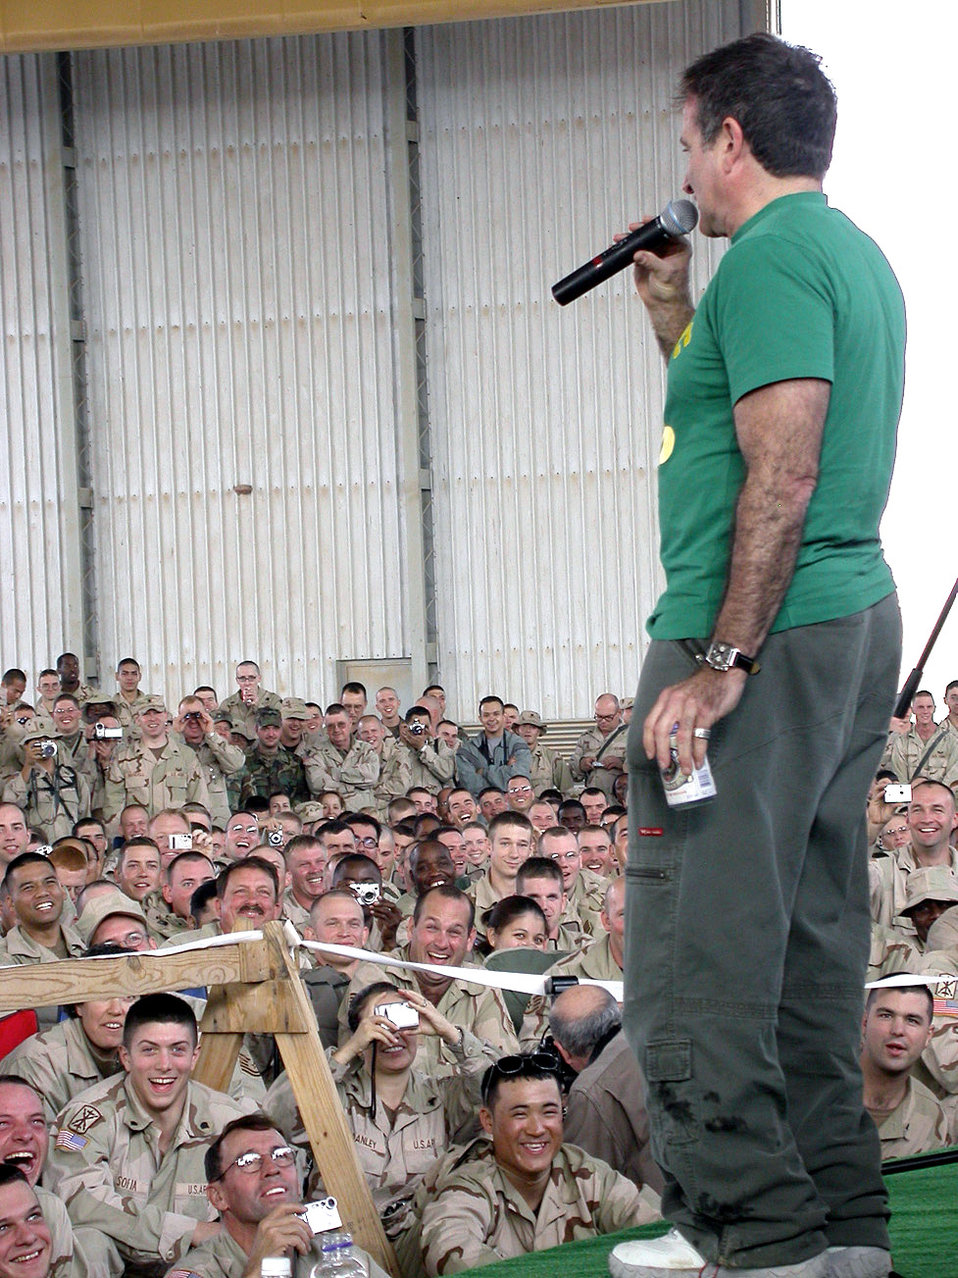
Stars tour Iraq for holidays

BALAD AIR BASE, Iraq -- Academy Award-winning actor and comedian Robin Williams performs for more than 300 airmen and soldiers deployed here Dec. 18. Also with him were Olympic gold medalist and professional wrestler Kurt Angle, NASCAR driver Mike Wallace and former model and television personality Leeann Tweeden.